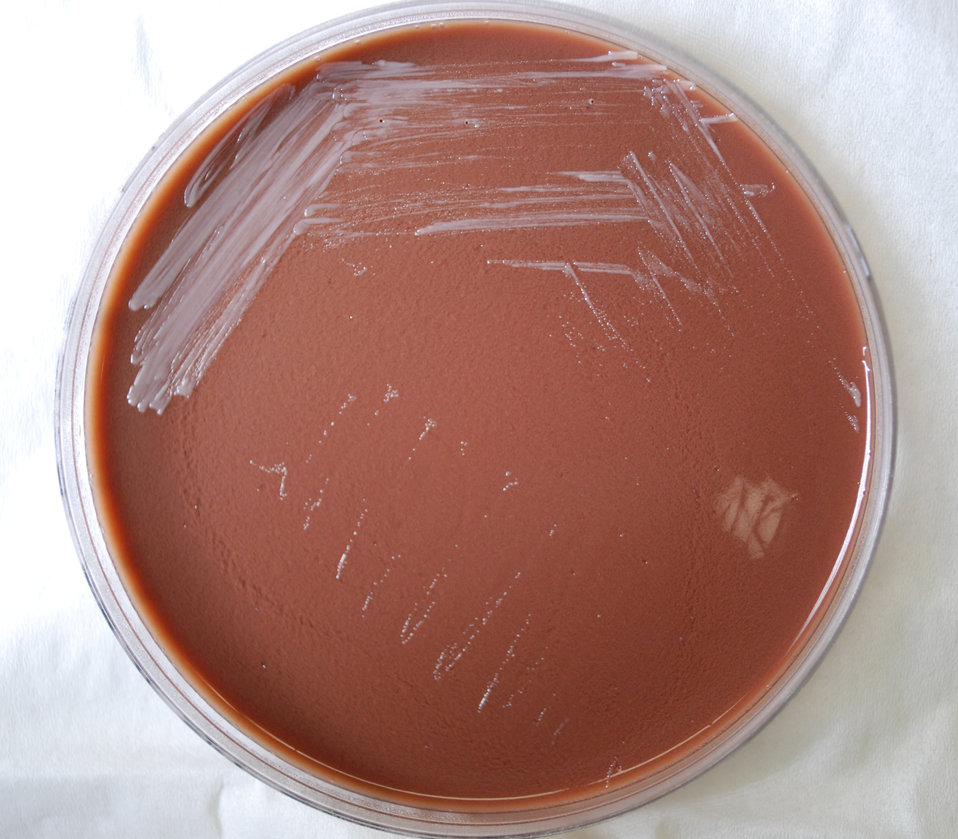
This photograph depicts the colonial morphology displayed by Gram-negative Brucella abortus bacteria, which was grown on a medium of chocolate agar, for a 48 hour time period, at a temperature of 37�C. This Petri dish and its contents were incubated in a CO2 incubator. For a closer view of these bacterial colonies, see PHIL 12289.